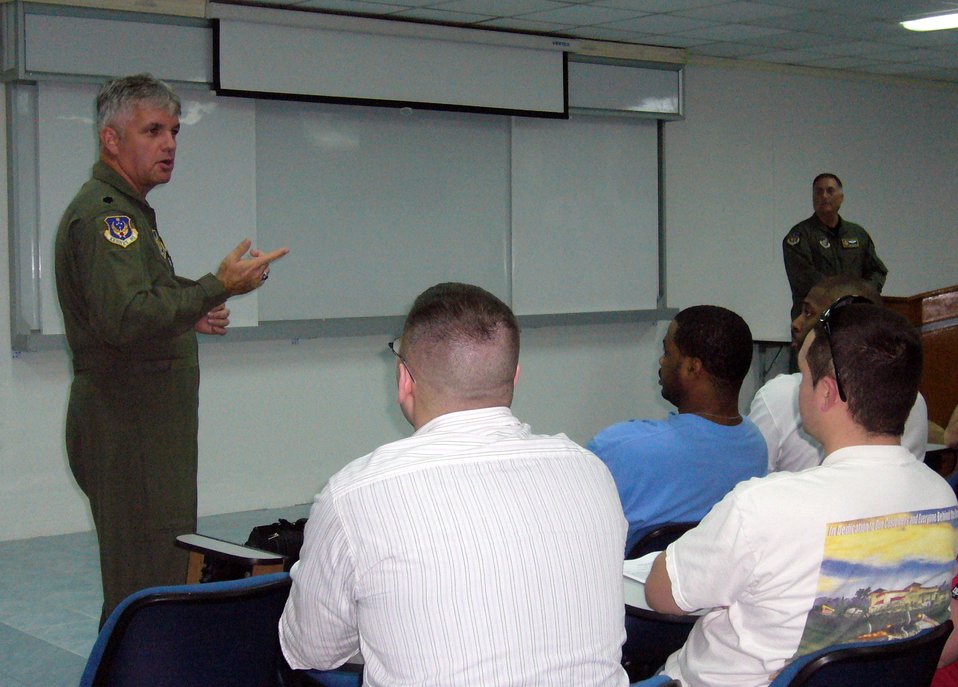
Cope Tiger set to kick off in Thailand

Lt. Col. Larry Germann (left) and Lt. Col. Don Herring (far right) brief members of the 51st Maintenance Group and 25th Fighter Squadron from Osan Air Base, South Korea, during their inprocessing Jan. 22 at Korat Royal Thai Air Base, Thailand. The 70 Osan AB members will participate in Exercise Cope Tiger '08, a Thai- and U.S.-sponsored multilateral joint and combined field training exercise and humanitarian and civic assistance exercise. Cope Tiger enhances combined readiness and interoperability, reinforces U.S. commitment to the Southeast Asian region, and demonstrates U.S. capability to project combined and joint forces strategically in a multilateral environment. Colonel Germann is the life fly cell director for Cope Tiger '08, and Colonel Herring is the 13th Air Force Air Expeditionary Wing vice commander.